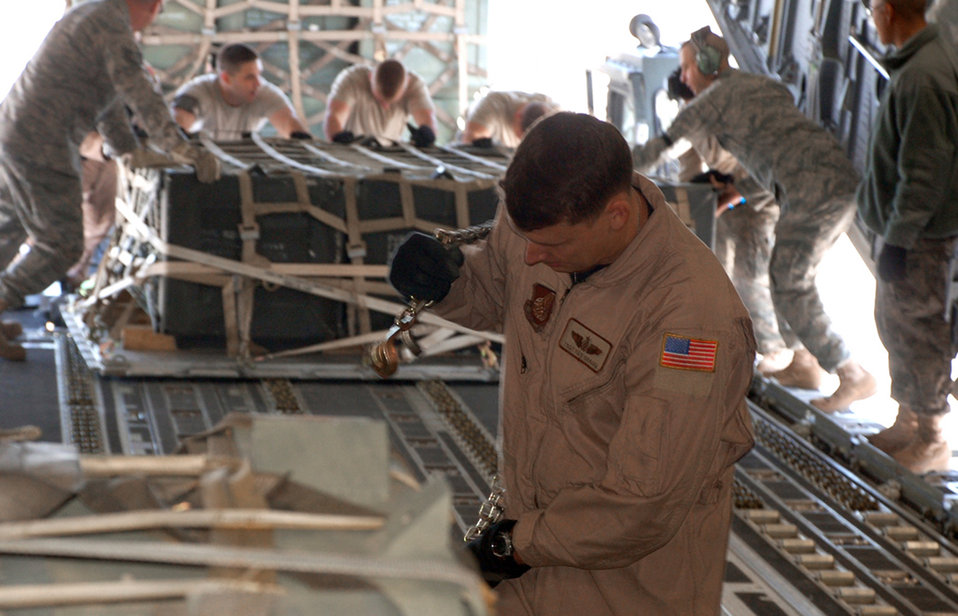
C-17 stage crew at Manas ramp up support for OEF

Tech. Sgt. Ken Bragg chains down cargo to be shipped from Manas Air Base, Kyrgyzstan, April 18, to Afghanistan via a C-17 Globemaster III. For the past five weeks, aircrews have been flying three flights nearly every day in order to deliver needed supplies for the buildup of various bases supporting Operation Enduring Freedom.